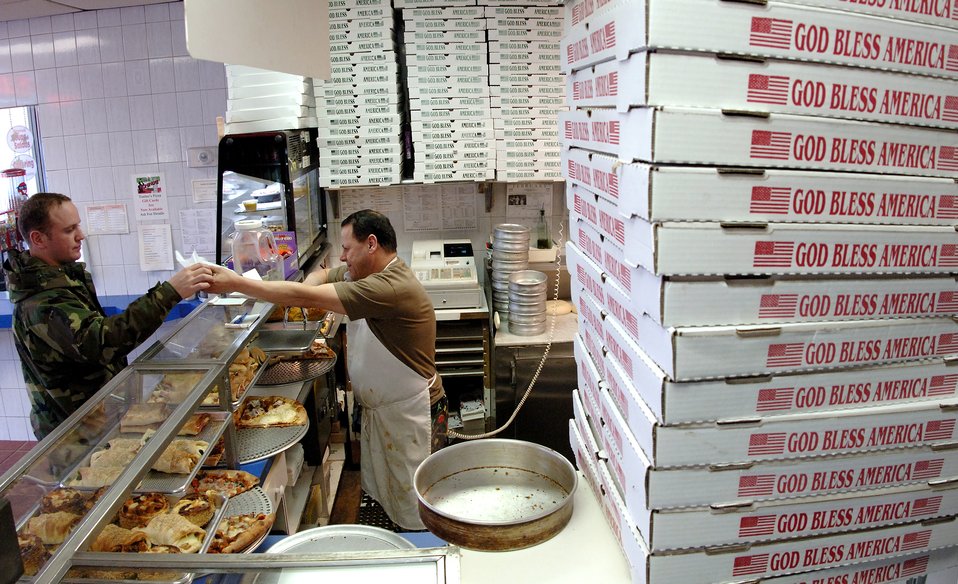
Guard wing makes mark on history

Manager Mike Refat serves a customer in his restaurant. He appreciates the 106th Rescue Wing being near his establishment. Mr. Refat has been the manager at Tonino's for 12 years and knows most of the guardsman at Francis E. Gabreski Field by name.